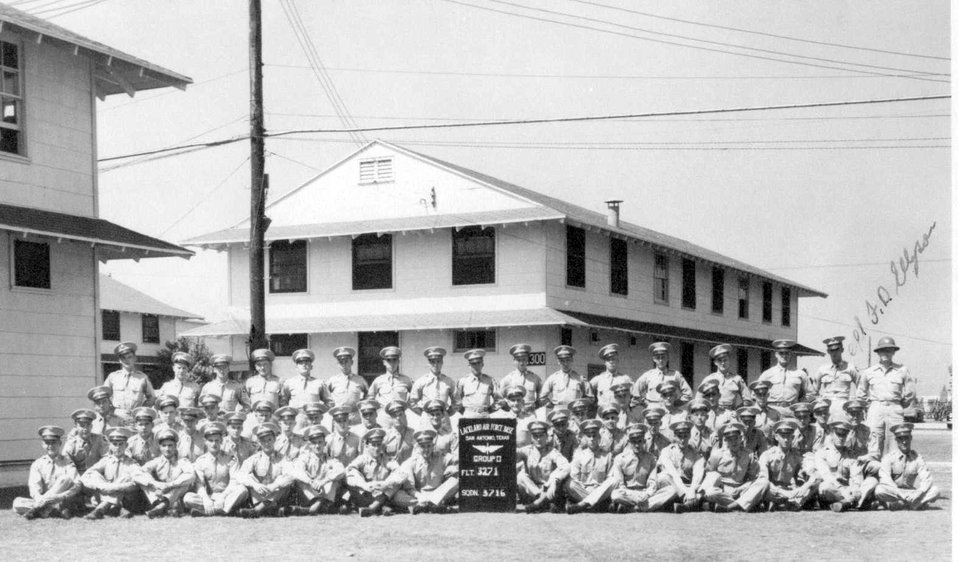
History project seeks basic-training photos